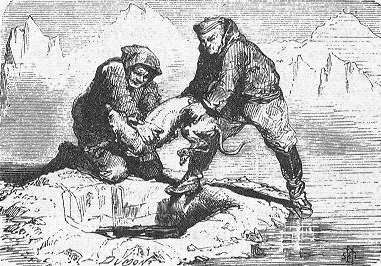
An illustration from Jules Verne's novel 'Journeys and Adventures of Captain Hatteras', part I: 'The English at the Noth Pole' drawn by Édouard Riou and/or Henri de Montaut. Polski: Ilustracja powieści Juliusza Verne'a 'Podróże i przygody kapitana Hatterasa', części I: 'Anglicy na Biegunie Północnym' autorstwa Édouarda Riou i/lub Henri de Montauta. Français : Jules Verne: 'Voyages et aventures du capitaine Hatteras - Les Anglais au Pôle Nord', Édouard Riou et Henri de Montaut.